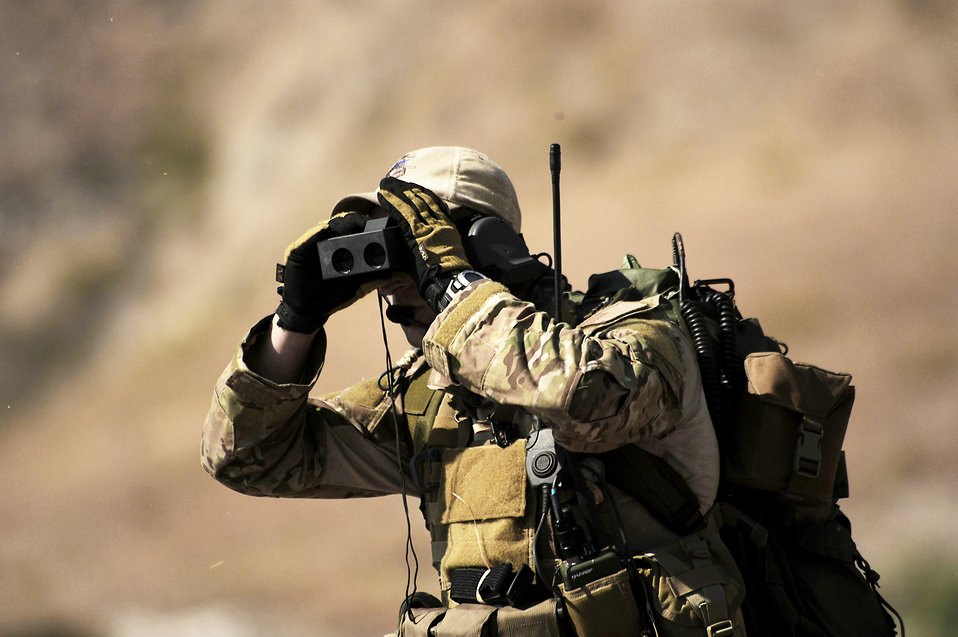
Joint team conducts drop zone survey

A U.S. Air Force combat controller uses a rangefinder for a drop zone survey outside Port-au-Prince, Haiti, Jan. 24, 2010, during Operation Unified Response.